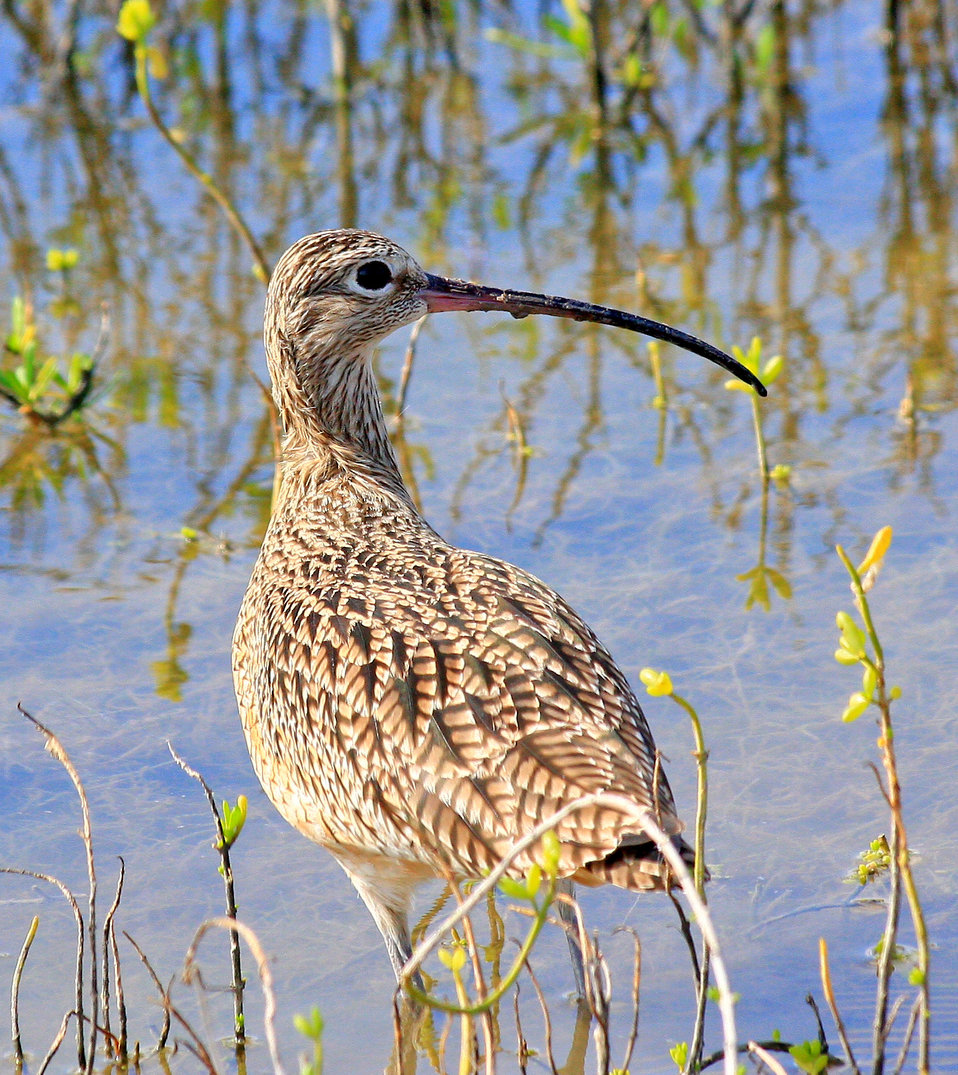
Long-billed Curlew, Laguna Atascosa National Wildlife Refuge

These birds are usually easy to find in winter toward the end of Bayside Drive at Laguna Atascosa NWR in Texas